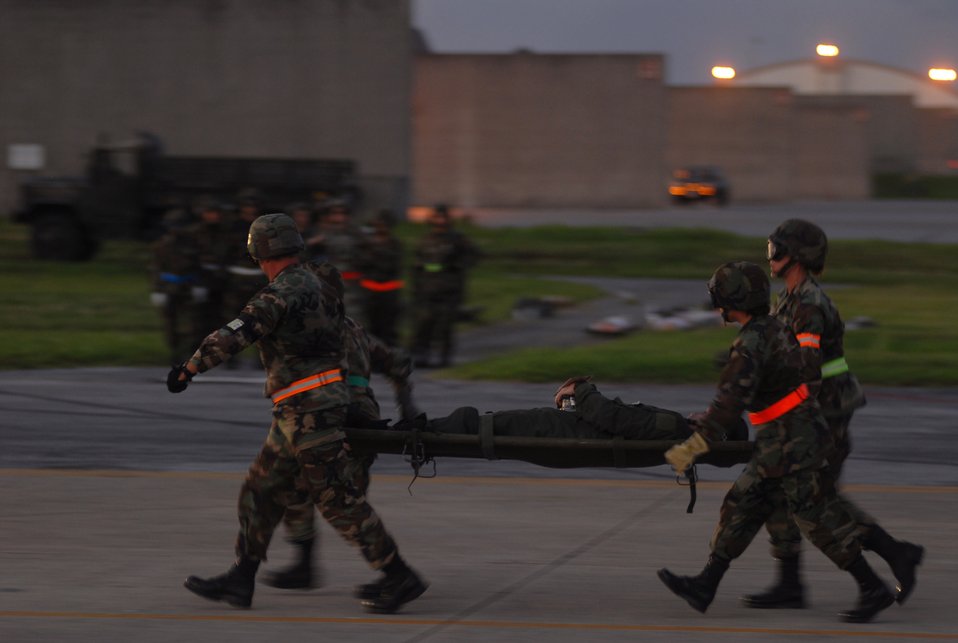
Mass casualty exercise

Airmen from the 18th Aeromedical Evacuation Squadron move swiftly to transport a simulated patient to a C-130 Hercules for evacuation during a mass casualty exercise at Kadena Air Base, Japan, Aug. 29.